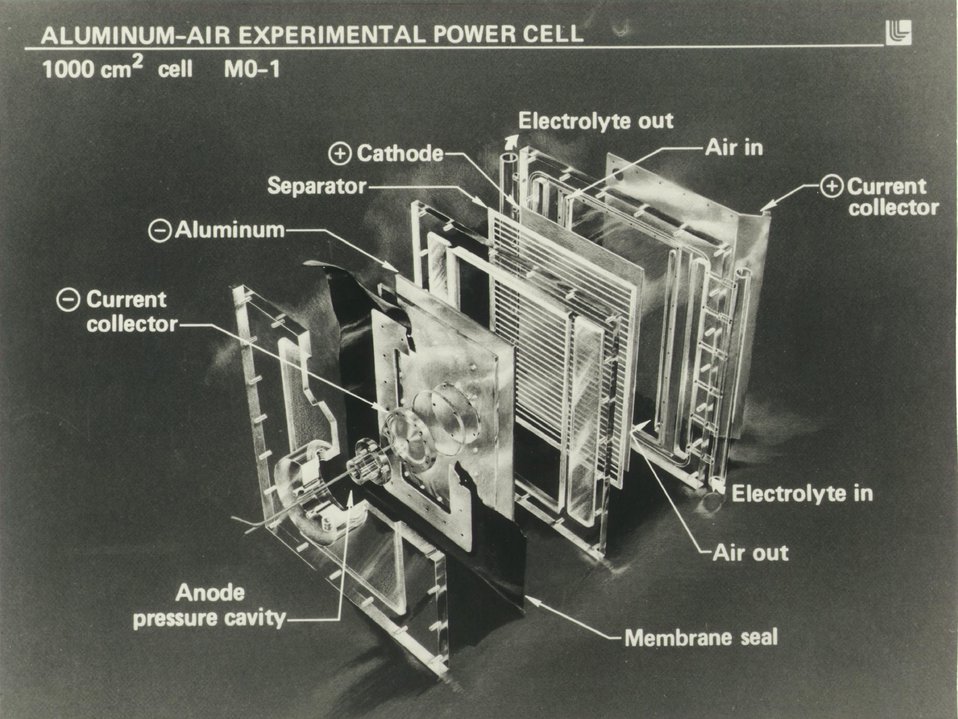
An artist's drawing shows an exploded view of the components of the unit cell of the aluminum air fuel cell being developed at LLNL as a rapidly refuelable power source for electric vehicles having performance equivalent to gasoline powered autos. The aluminum plate serves as both battery fuel and negative electrical terminal. c. 1980